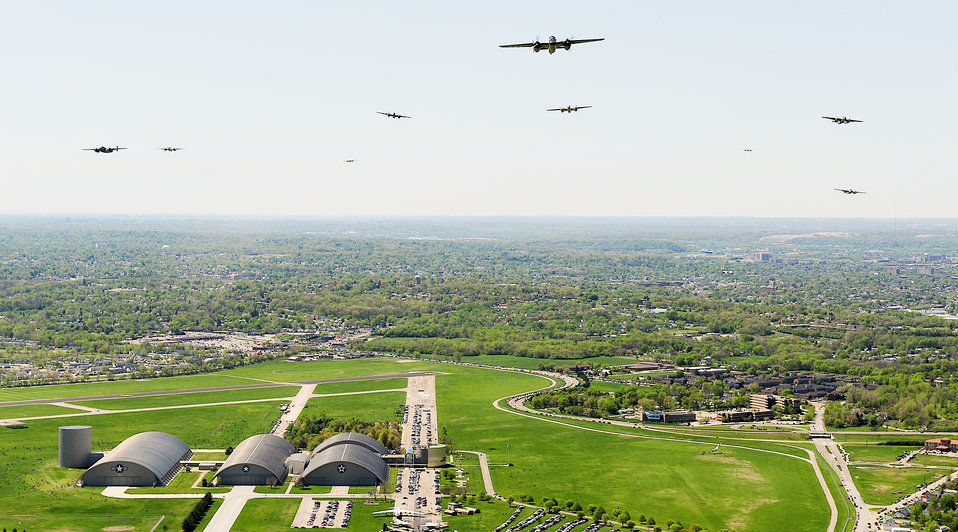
Doolittle Raiders reunite at Air Force museum

B-25 Mitchells fly over the National Museum of the U.S. Air Force during a memorial flight honoring the Doolittle Tokyo Raiders April 18, 2010, at Wright-Patterson Air Force Base, Ohio.